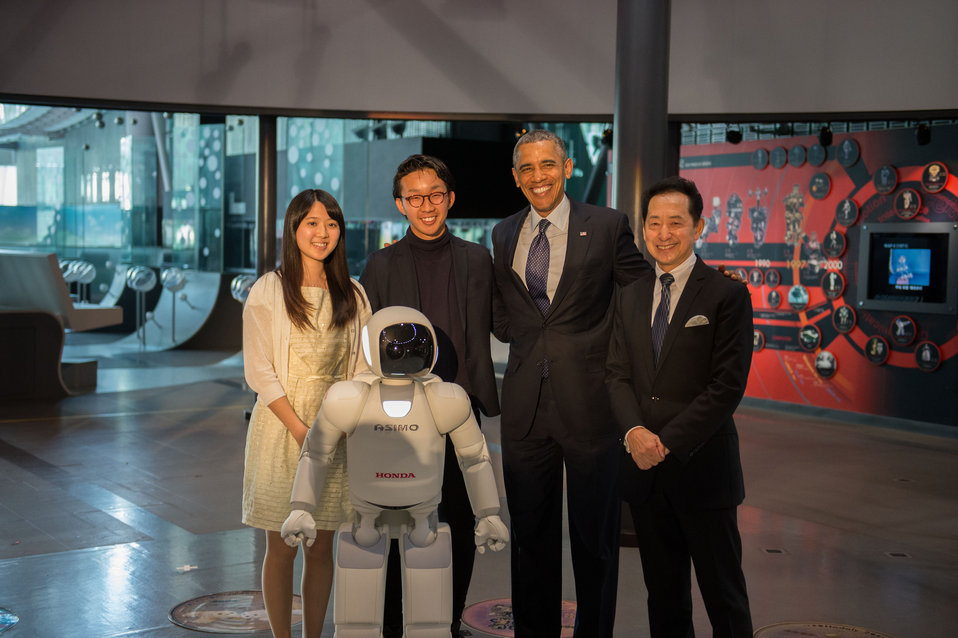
President Obama Poses for a Photo with ASIMO and Students

U.S. President Barack Obama, with Executive Director Mamoru Mohri of the Miraikan (the National Museum of Emerging Science and Innovation) and Japanese students, poses for a photo with ASIMO the humanoid robot during his visit to the museum in Tokyo, Japan, on April 24, 2014.